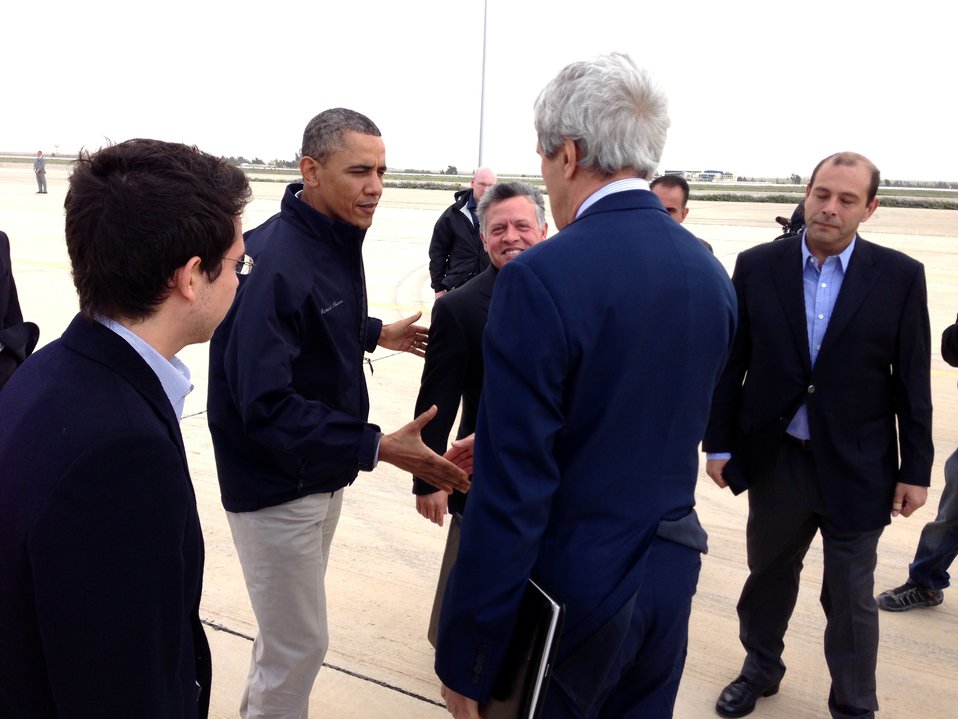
Secretary Kerry Bids Farewell to President Obama in Amman

U.S. Secretary of State John Kerry bids farewell to President Barack Obama who departed Jordan on March 23, 2013. Secretary Kerry remained in Jordan to continue meetings in Jordan and Israel.